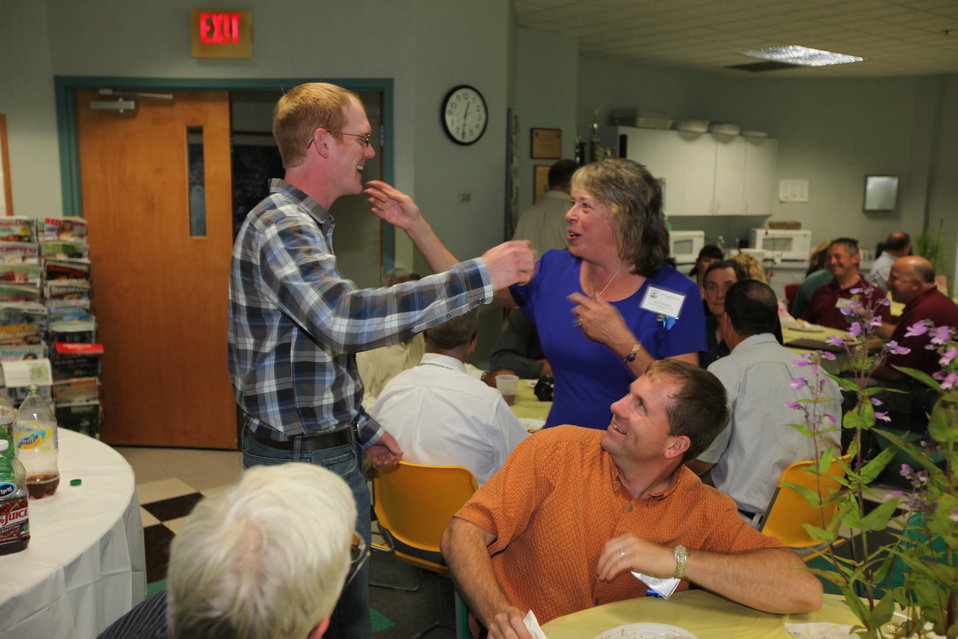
Northeast Region Employee Appreciation Awards

Luncheon